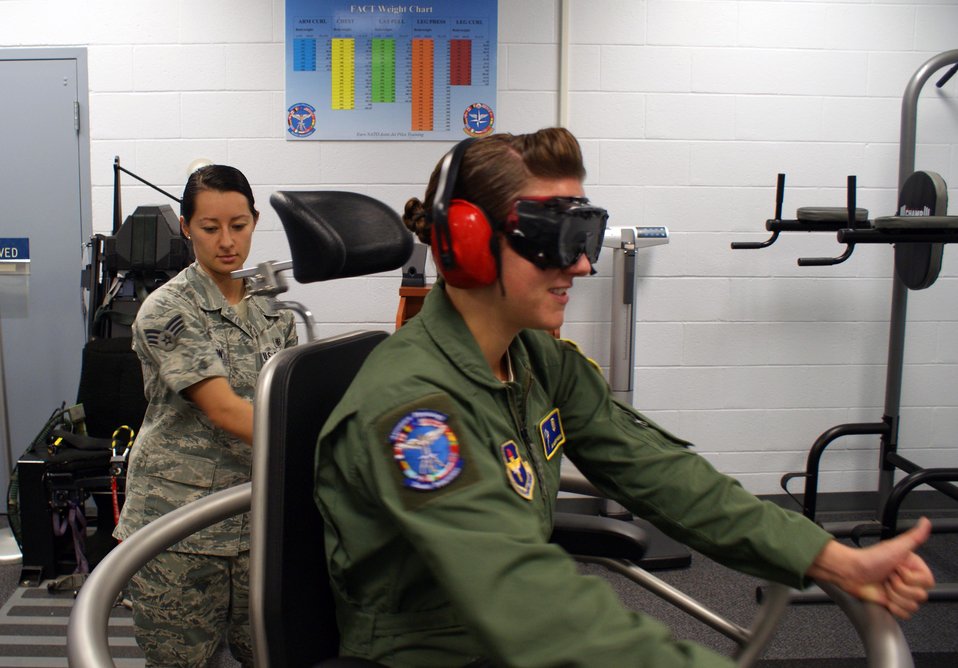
Hypoxia refresher training

Senior Airman Katia Cordon (left) educates Airman 1st Class Allison Freeman about spatial disorientation during Barany Chair training at Sheppard Air Force Base, Texas, on June 8, 2012. The spatial disorientation simulator creates the same feelings pilots and aircrew members have while in actual flight. Cordon is an 82nd Aerospace Medicine Squadron aerospace and operational physiology technician.